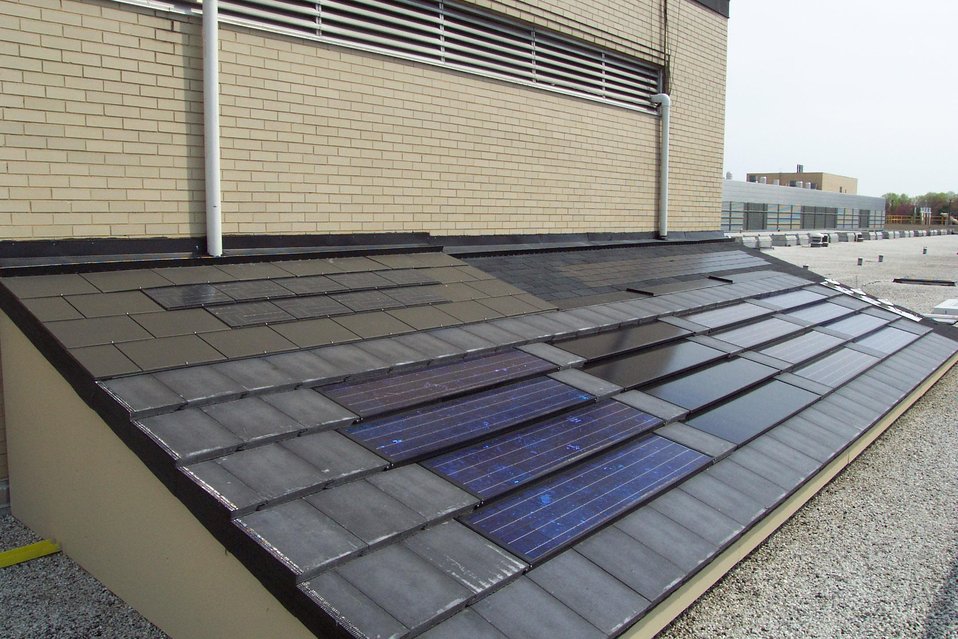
Roof Photovoltaic Test Facility

NIST's new Roof Photovoltaic Test Facility duplicates real-life conditions to monitor photovoltaic (PV) systems blended into concrete tile, slate and asphalt shingle roofs. Data from PV embedded systems and other framed PV roof modules systems will be used to validate or improve energy prediction models.